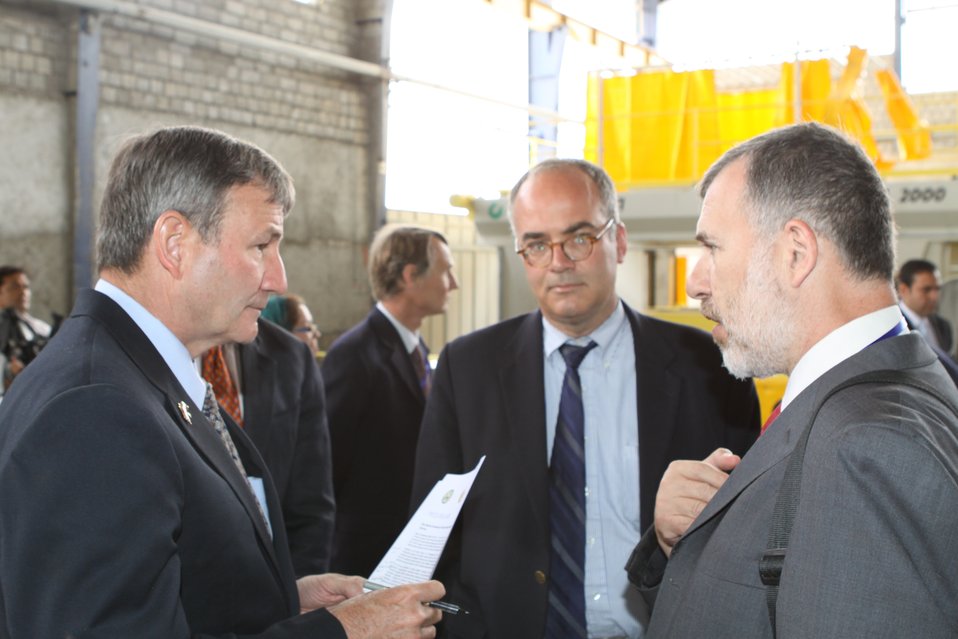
100525 Hirat Marble Conference 300